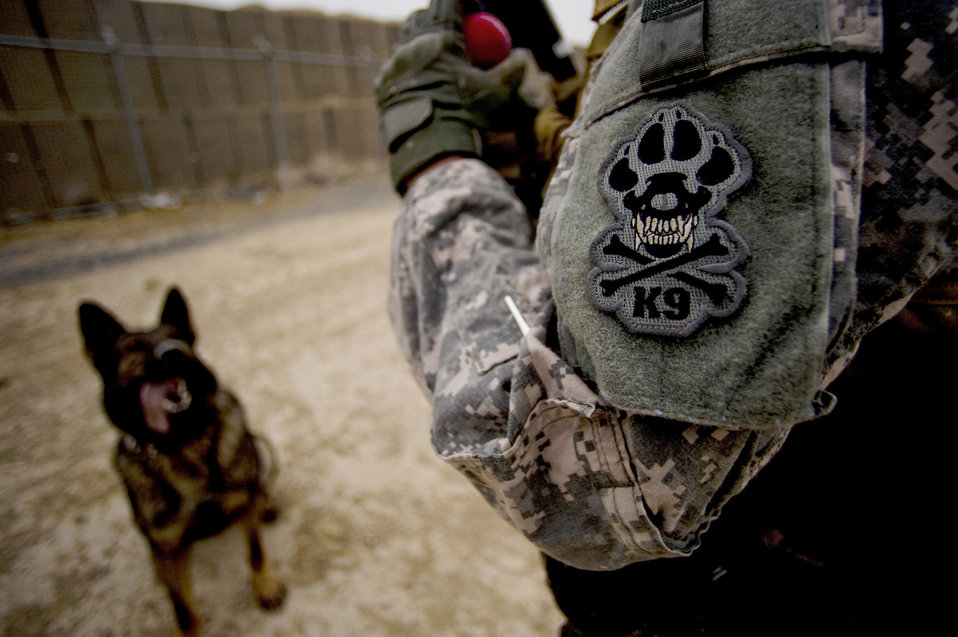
Combined Team Zabul

Army Spc. Joseph Lopez praises and prepares to give a chew toy to Coley, his military working dog, after Coley successfully sniffed out devices during an explosive device detection training session Feb. 18, 2011, at Forward Operating Base Lagman, Afghanistan.